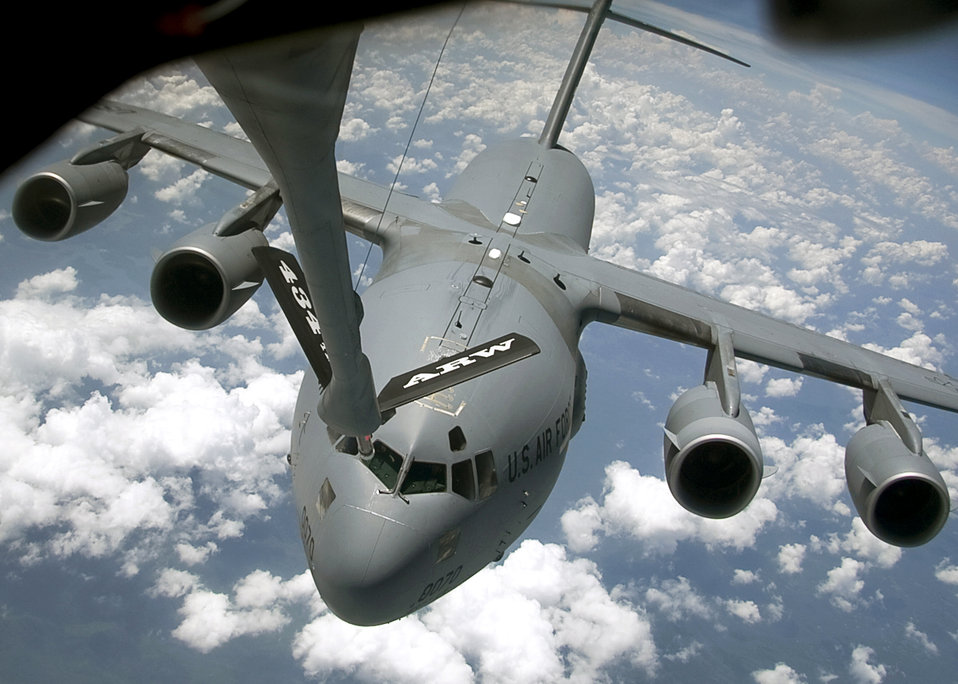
It's a beautiful day

A C-17 Globemaster III from the 437th Airlift Wing flies behind a KC-135R Stratotanker from the 434th Air Refueling Wing during an aerial refueling mission Aug. 4, 2010 near Grissom Air Reserve Base, Ind. The 437th AW is based out of Joint Base Charleston, S.C., and the 434th ARW is at Grissom ARB.